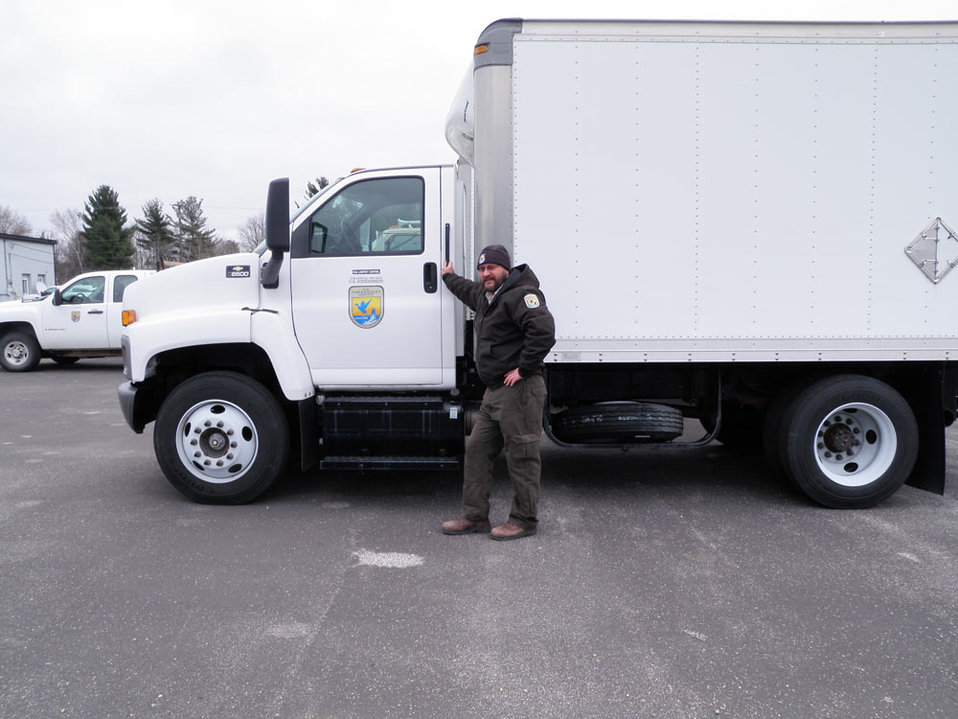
Michael Sell-Midwest Region

Michael Sell served in the Coast Guard from 1986 to 2011 and retired as Machinery Technician, Senior Chief Petty Officer. He once spent 2 ½ months on a Polar Ice Breaker, breaking ice in Antarctica for scientific research, although he spent the majority of my time in the engine rooms, keeping propulsion equipment operational. He is now a Maintenance Worker with Ludington Biological Station in Michigan working on the Sea Lamprey Control Program.